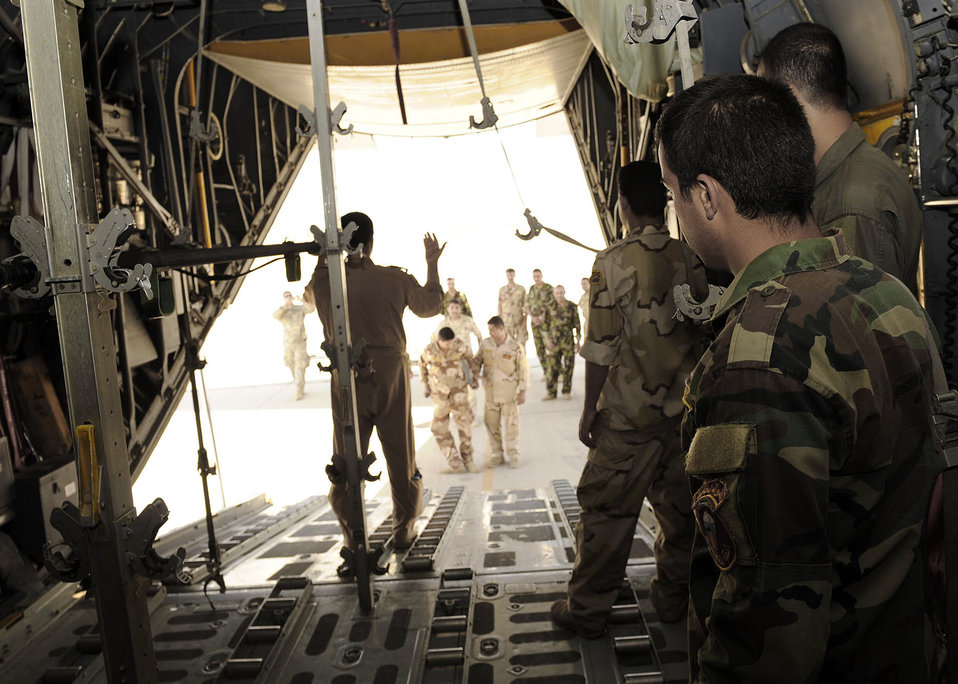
Air Force flight surgeons hand over training mission to Iraqis

An Iraqi soldier watches as Iraqi Lt. Amar K. Gaad marshals the litter into the C-130 during aeromedical evacuation transport training June 2 at New Al-Muthana Air Base, Iraq. The four-week course, once taught by U.S. instructors, is now instructed by Iraqis. Lieutenant Gaad is a nurse and flight medic instructor.